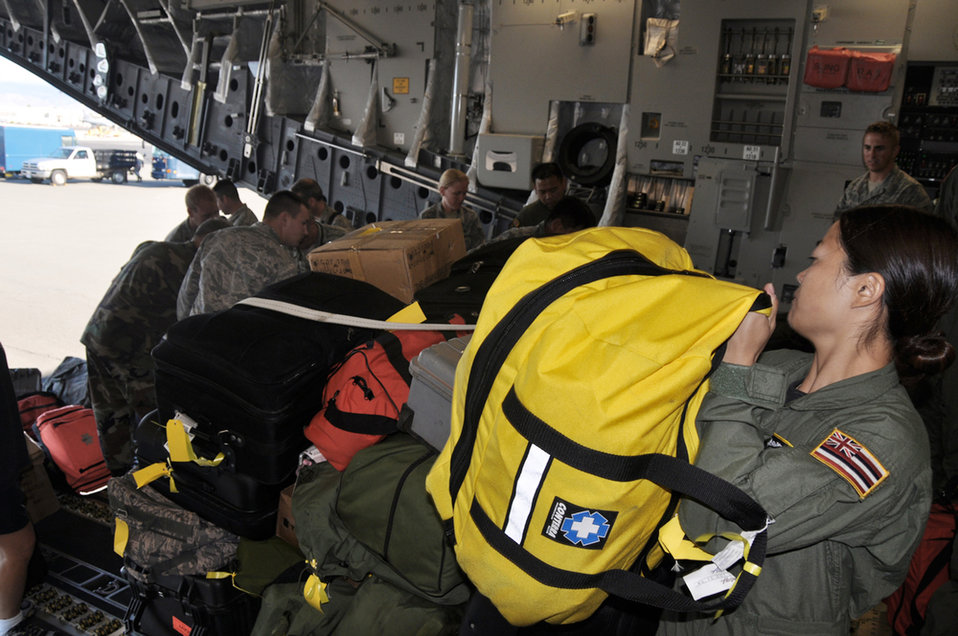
Hawaii Guard members give Pacific Angel a lift

Tech. Sgt. Kimberly Kido prepares to strap down medical bags on a C-17 Globemaster III to support Operation Pacific Angel 2009 July 14 at Hickam Air Force Base, Hawaii, before departing for Kupang, Indonesia. Sergeant Kido is a loadmaster with the Hawaii Air National Guard's 204th Airlift Squadron at Hickam.